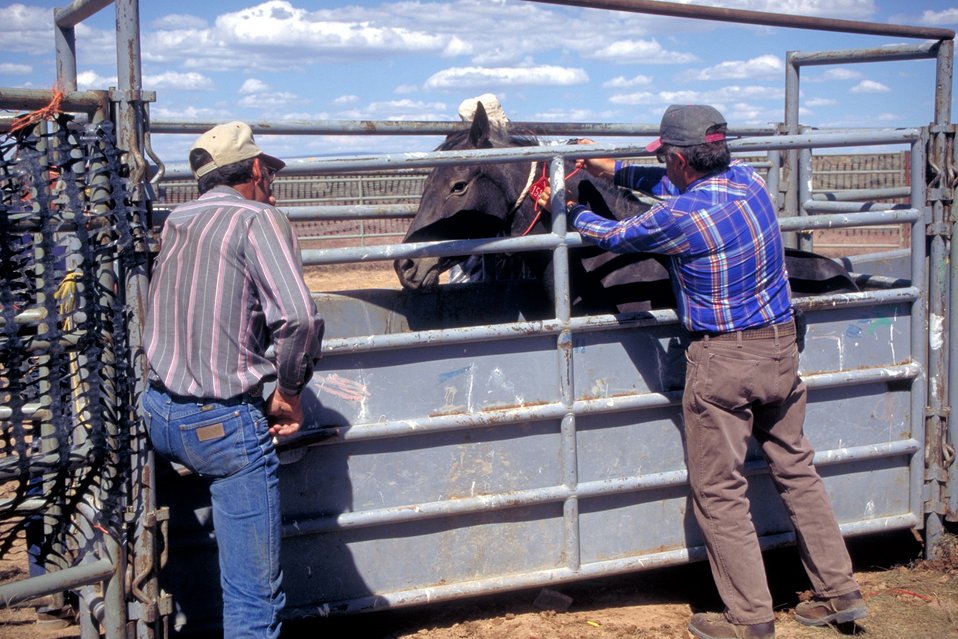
EIA testing near Vernal, Utah.